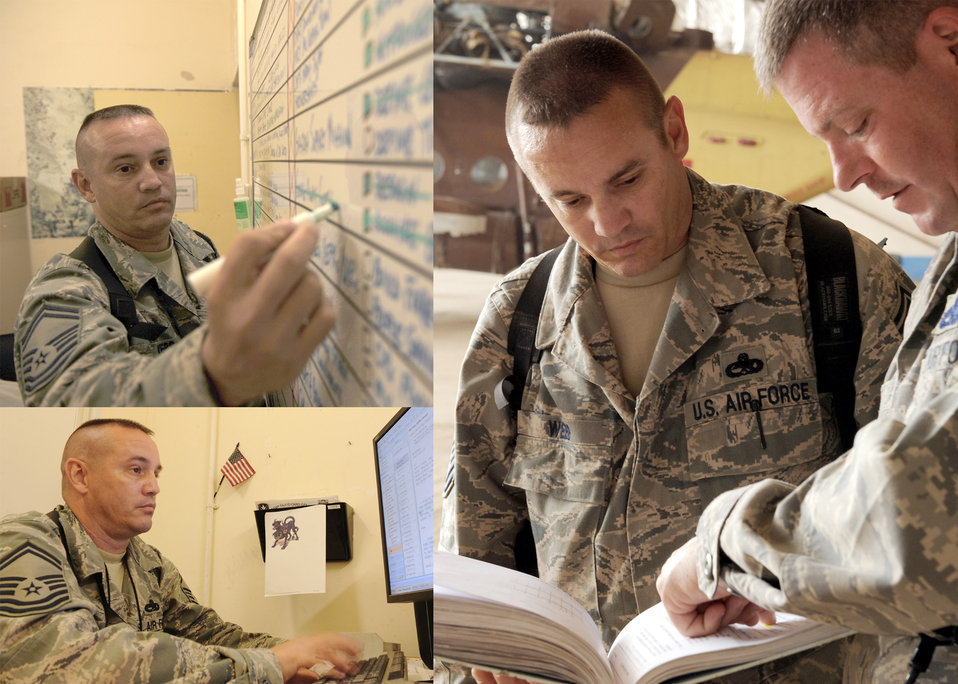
Taji senior NCO the

Senior Master Sgt. Ken Webb holds three key roles for Airmen stationed at Camp Taji, Iraq, as the superintendent for the 721st Air Expeditionary Advisory Squadron superintendent, the maintenance superintendent and additional-duty first sergeant. The Texas City, Texas, native is deployed from Hurlburt Field, Fla. At Camp Taji, roughly 50 Airmen are assisting the Iraqi air force become more self-reliant as the Iraqi military becomes increasingly responsible for its national security.